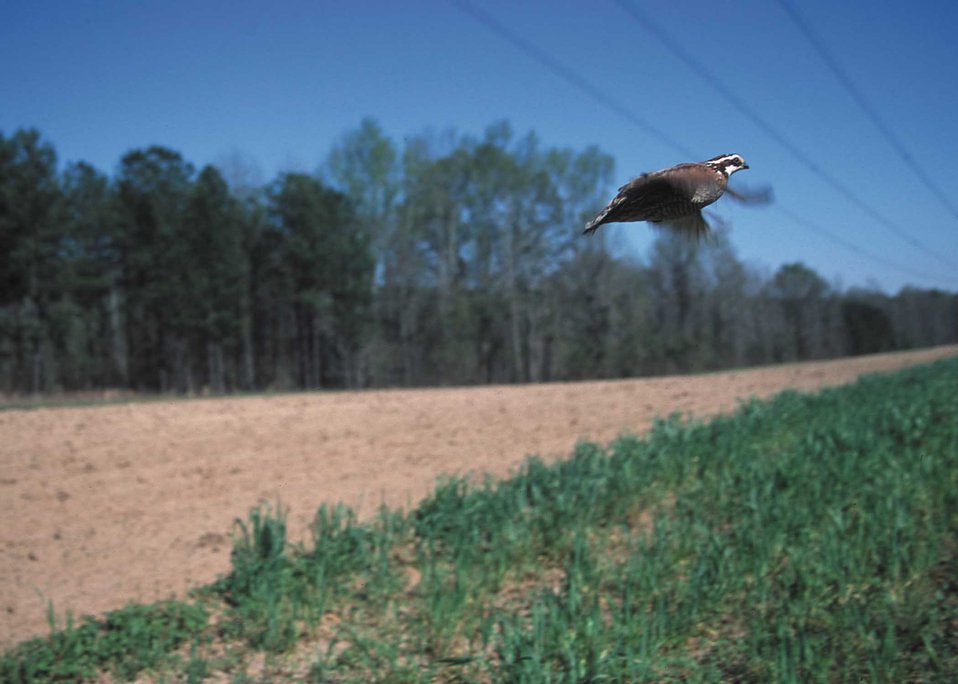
Bobwhite quail on Project Wings site in Georgia. Project implemented by NRCS, RC&D, and Georgia Power Company.